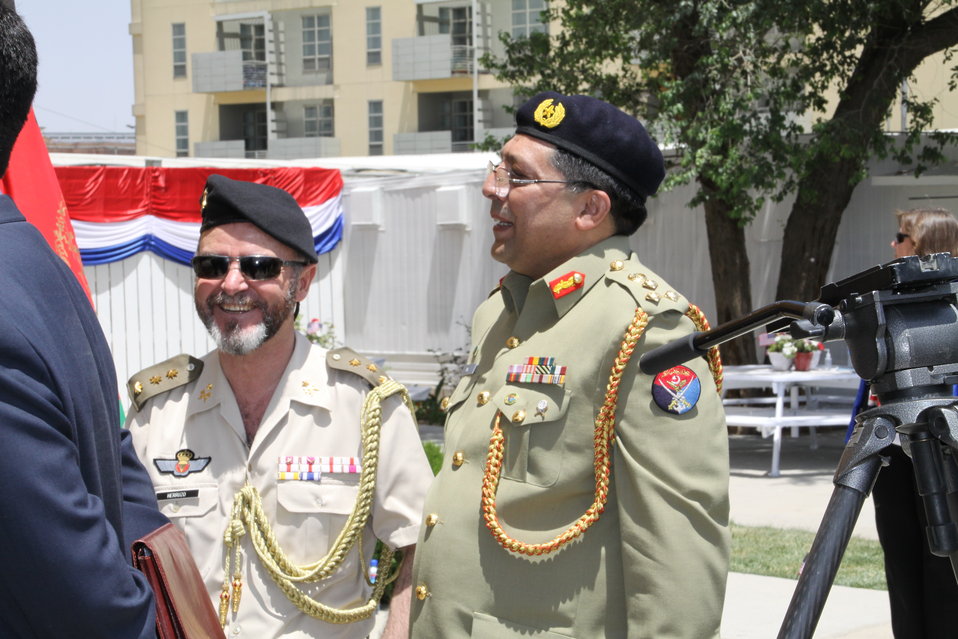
Kabul Official July 4th Celebration